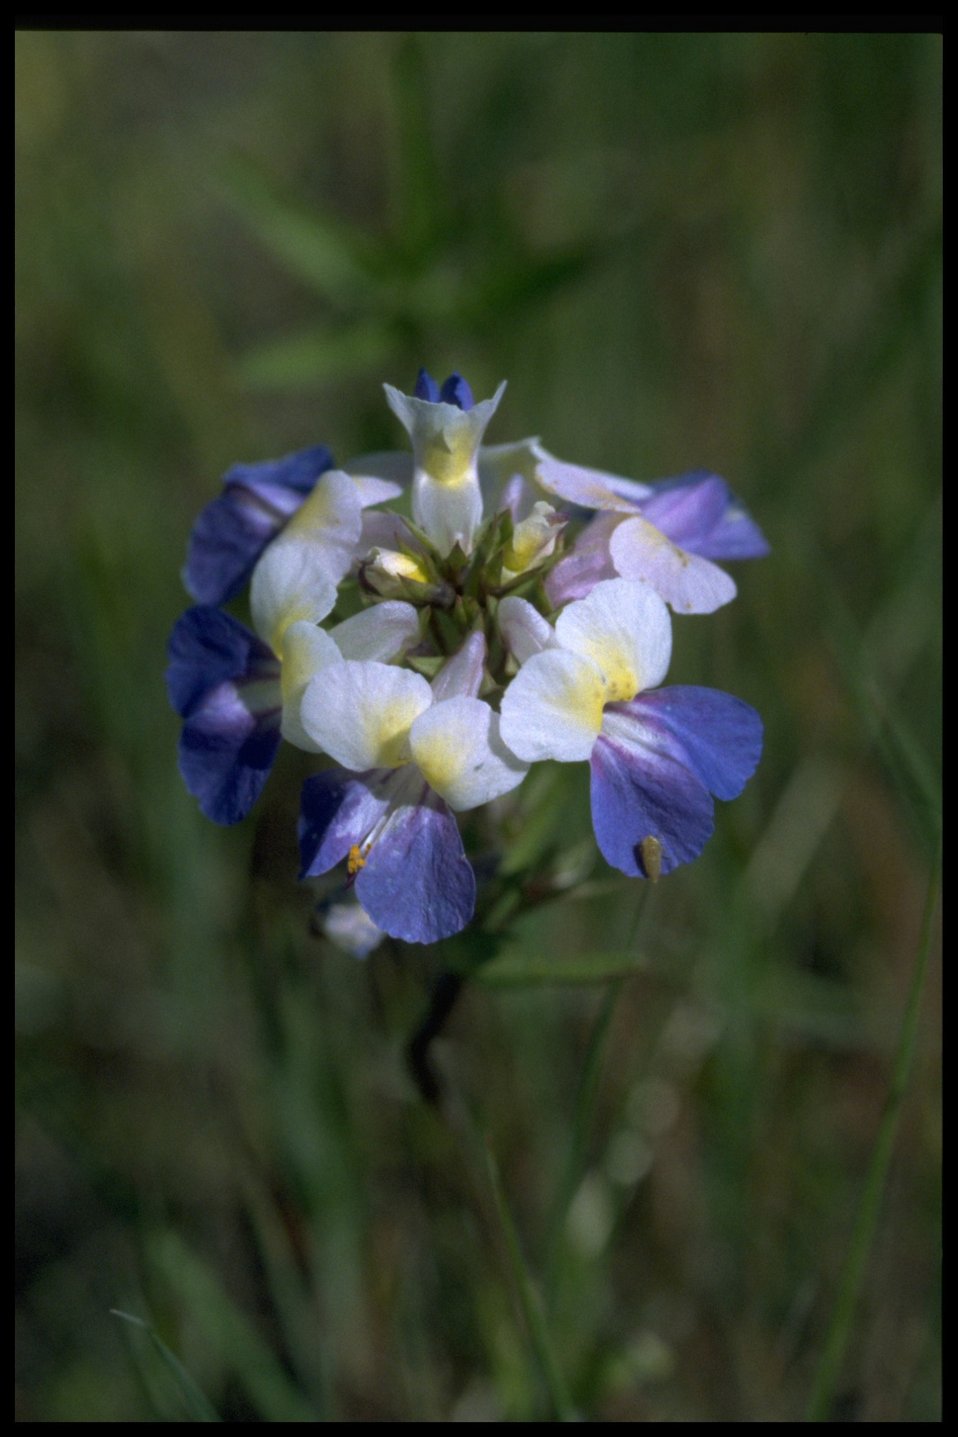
Closeup shot of Collinsia grandiflora.